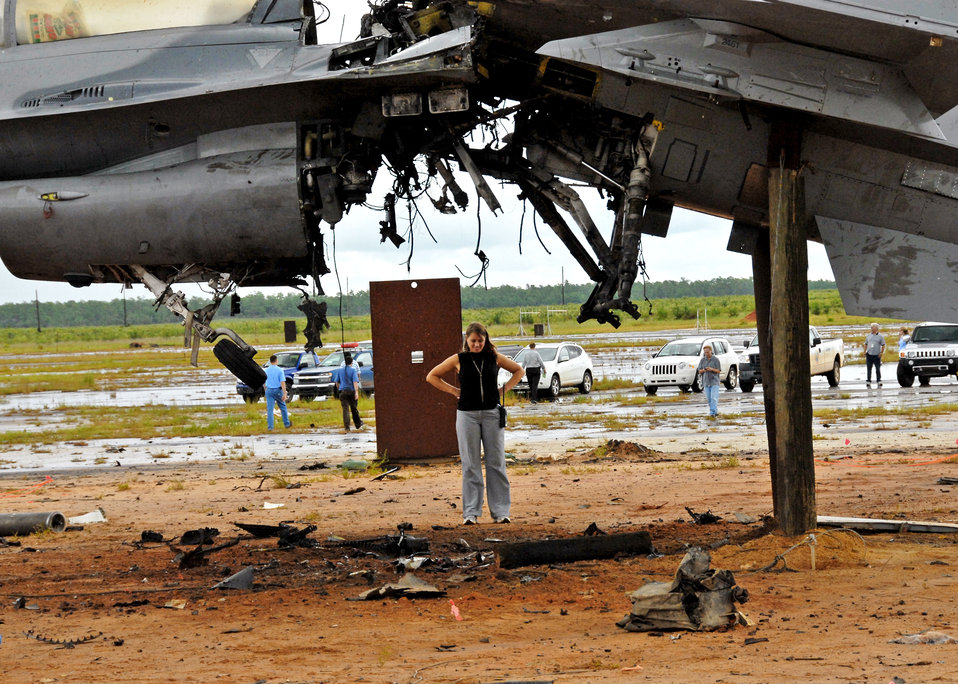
Destructive F-16 test

Beth Bartlett surveys the damage after the explosion of an F-16 Fighting Falcon Aug. 19, 2010, on the range at Eglin Air Force Base, Fla. The explosion was a test of the flight termination system to be used in the QF-16, a supersonic reusable full-scale aerial target drone modified from an F-16. The purpose of the test was to demonstrate that the FTS design will be sufficient to immediately terminate the flight of a QF-16, as well as to determine a range safety debris footprint. Ms. Bartlett is a test engineer for the flight termination system test.